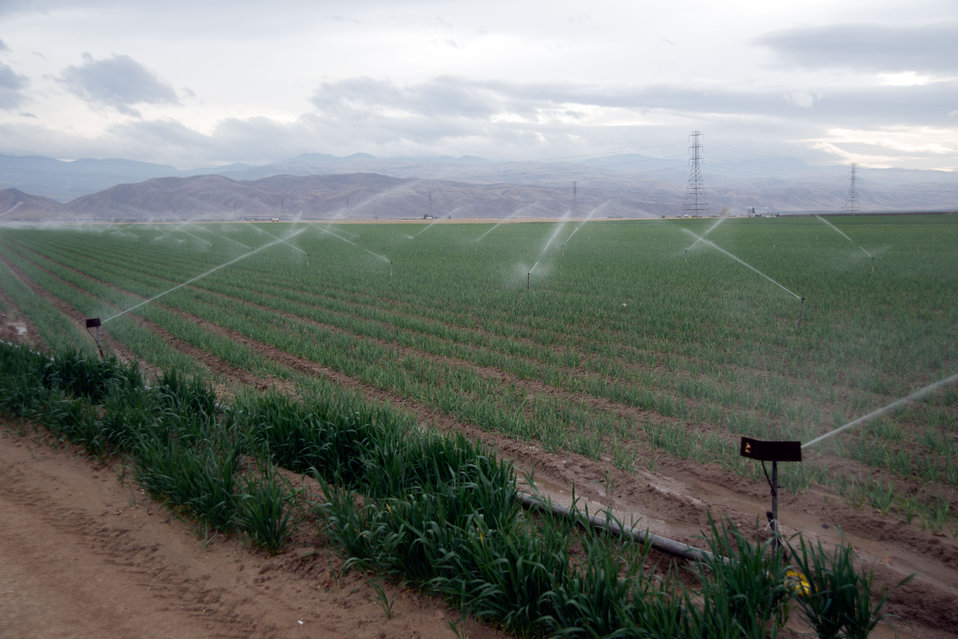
Crops are watered along Highway 99 in the Lamont farming communities southeastern Joaquin Valley in Kern County, CA on Feb. 26, 2014.